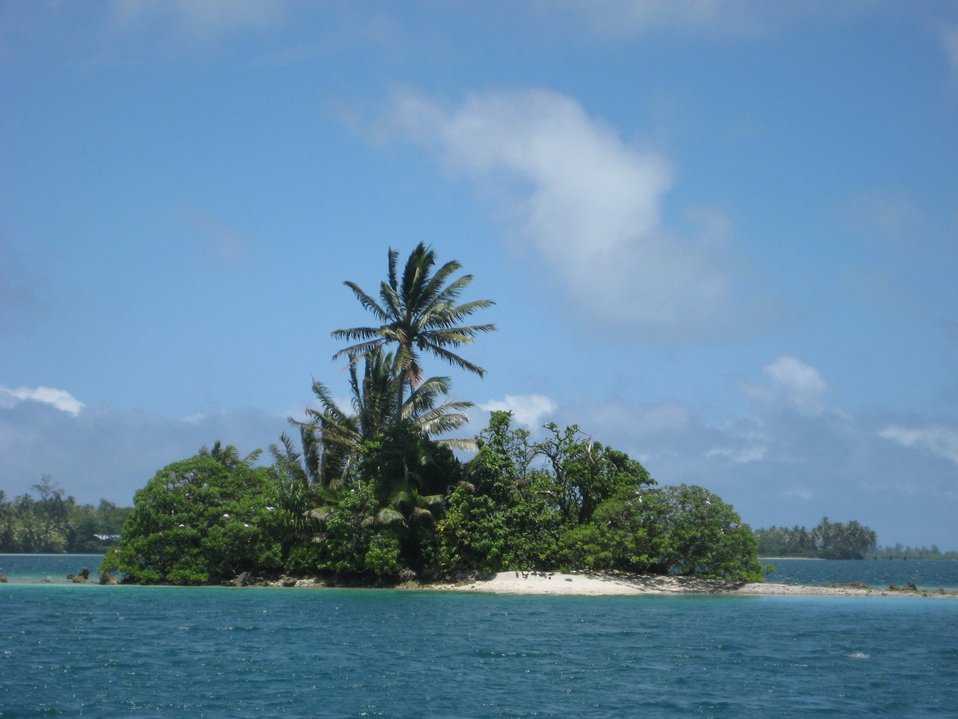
A tropical islet